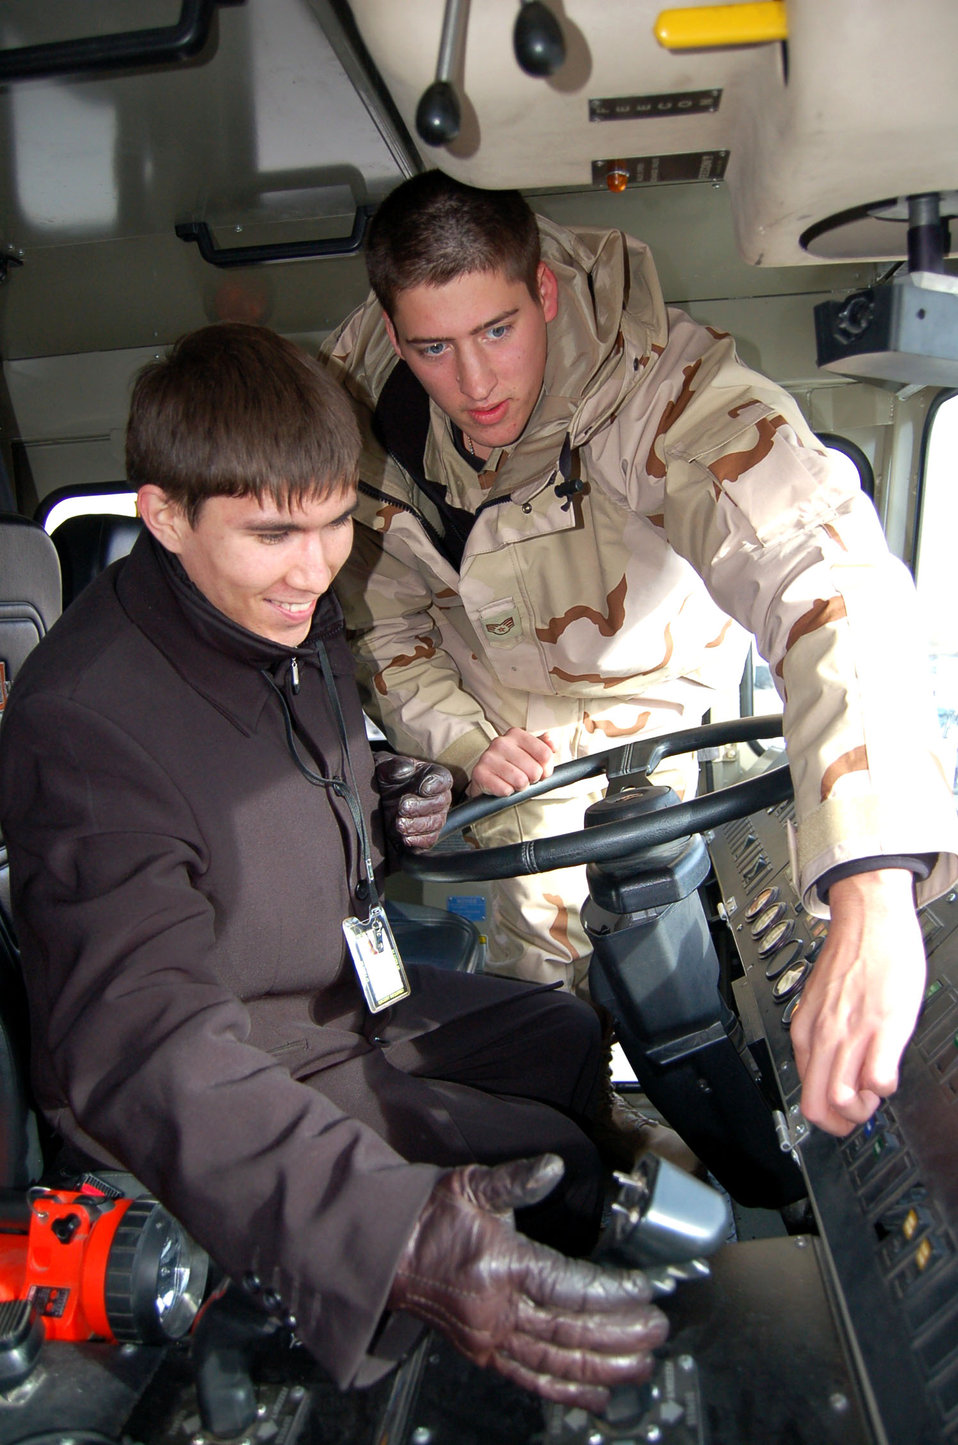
Fire truck operation 101

Senior Airman Joshua Johnson shows Alisher Tashmatov how to operate the water pump on one of the base fire trucks Nov. 29 at Manas Air Base, Kyrgyzstan. Mr. Tashmatov is the press secretary for the Kyrgyzstan Ministry of Emergency Situations. He and 12 of his colleagues from other Kyrgyz government agencies visited the base for a tour and lunch at the dining facility. Airman Johnson is a 376th Expeditionary Civil Engineer Squadron fire truck driver deployed from the 92nd CES at Fairchild Air Force Base, Wash.